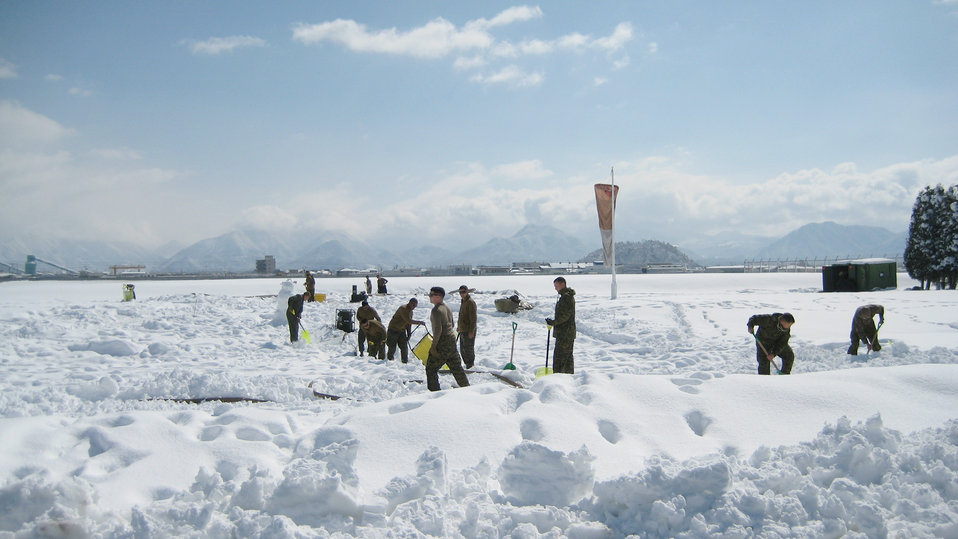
Forward area refueling point

Airmen assigned to the 374th Logistics Readiness Squadron Fuels Management Flight work with Marines at a forward area refueling point in support of humanitarian assistance and disaster relief efforts March 18, 2011, at Yamagata Airport, Japan.